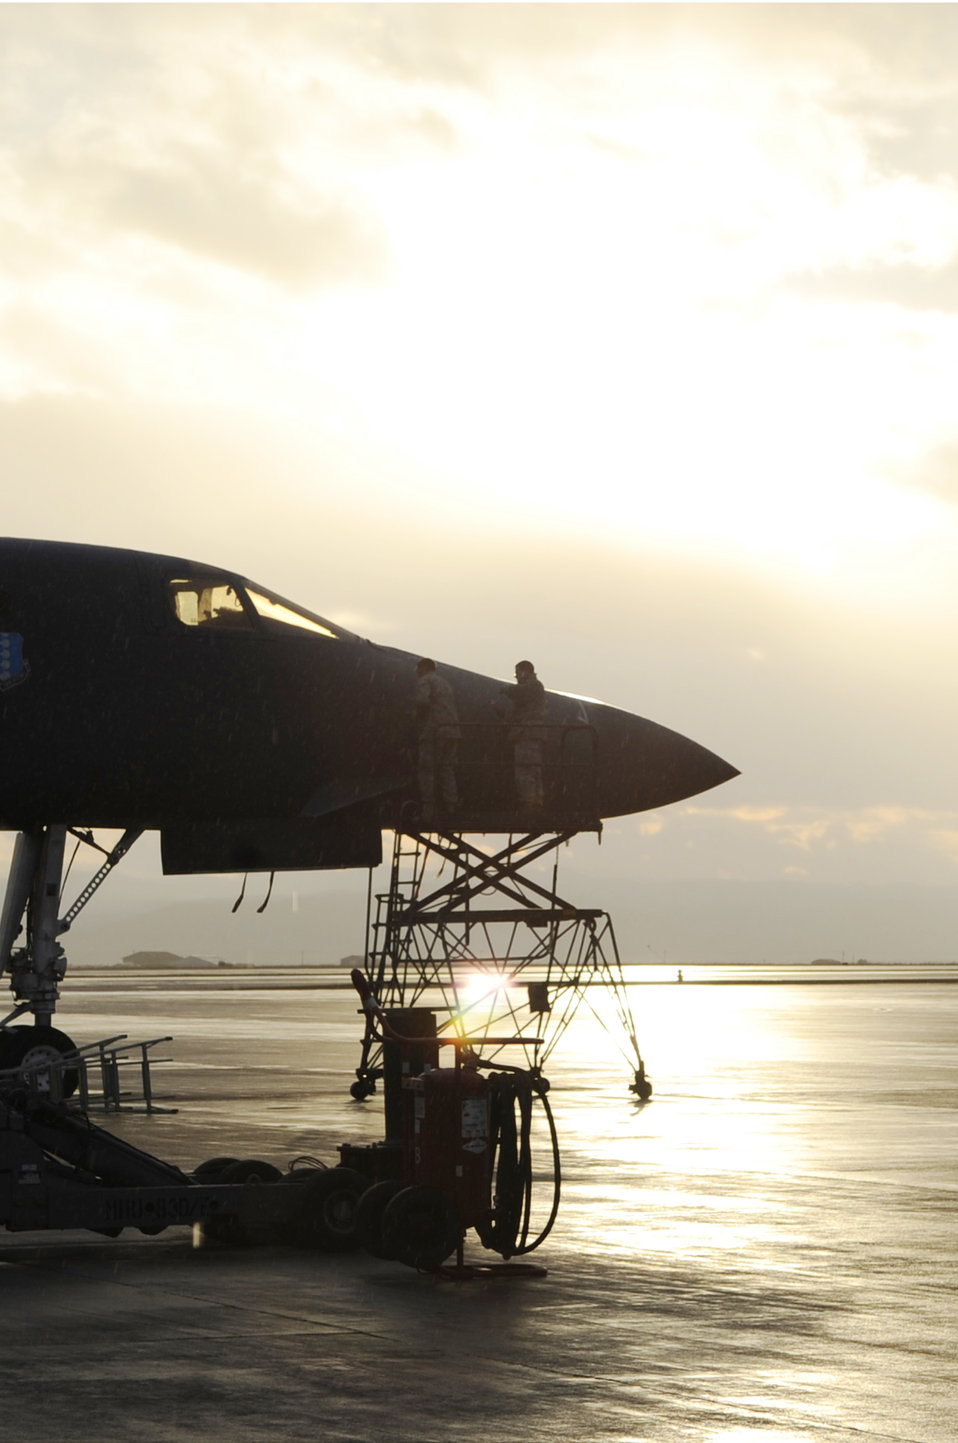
B-1s at Ellsworth

A B-1B Lancer sits on the Ellsworth Air Force Base, S.D., flightline, Oct. 15, 2009, prior to a training mission. The B-1 can rapidly deliver massive quantities of precision and non-precision weapons against any adversary, anywhere in the world.